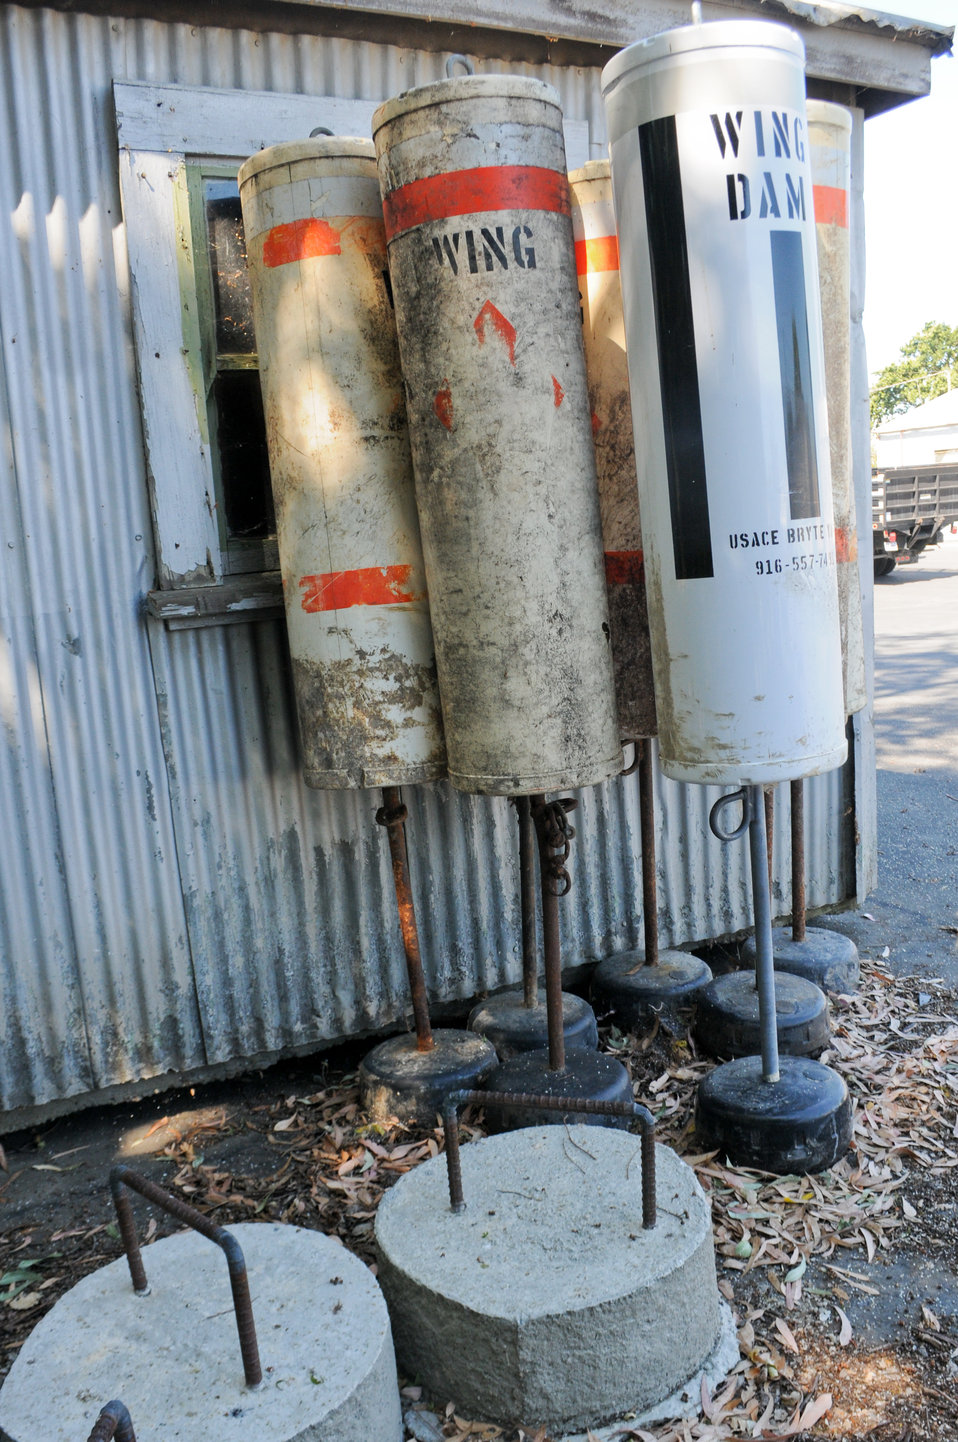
Wing dam buoys and anchors

Wing dam buoys, shown July 19, 2011 (left), await replacement at the Sacramento District’s Bryte Yard maintenance facility in West Sacramento, Calif. Bryte Yard maintains 54 buoys on the Sacramento River as part of the Corps’ river navigation responsibility.